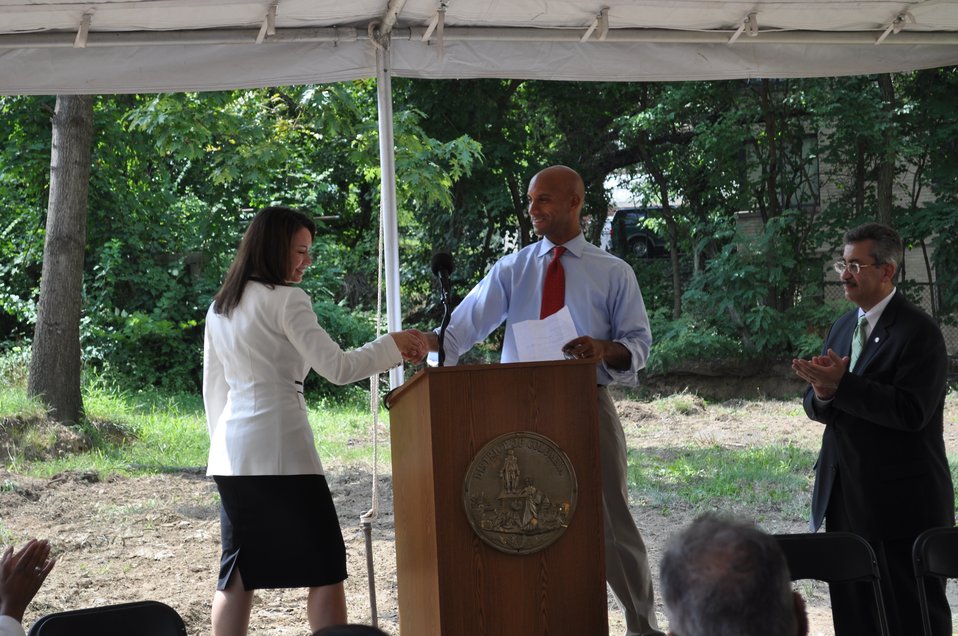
Treasurer Rios at a groundbreaking on new Vida Senior Residence funded in part by the Recovery Act, 7/27/2010

D.C. Mayor Fenty introduced Treasurer Rios at the groundbreaking event for the Vida Senior Residences.